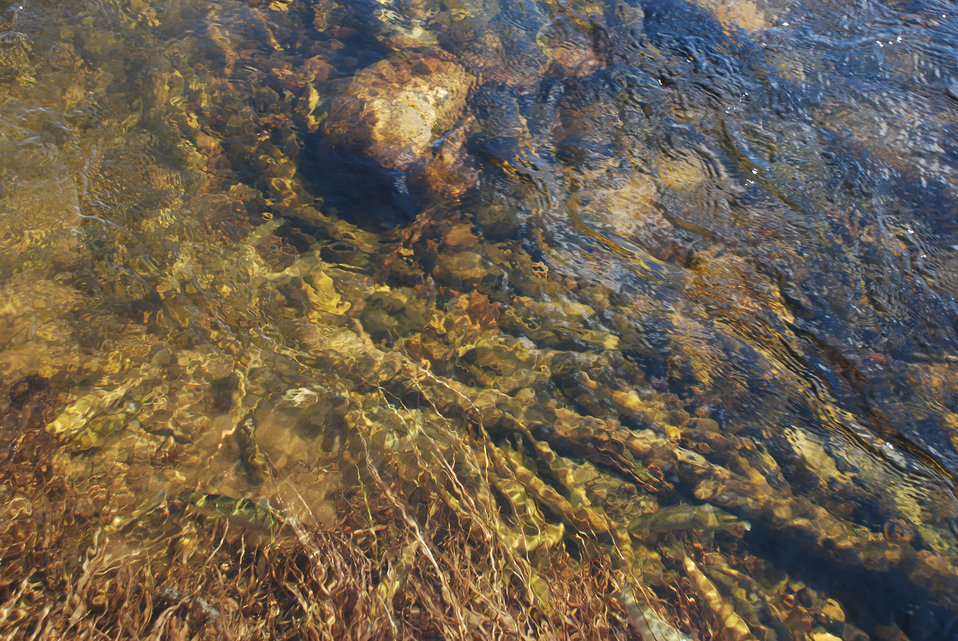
Atlantic Salmon Dispersal

The Atlantic salmon smolts disperse into their natural environment within seconds.